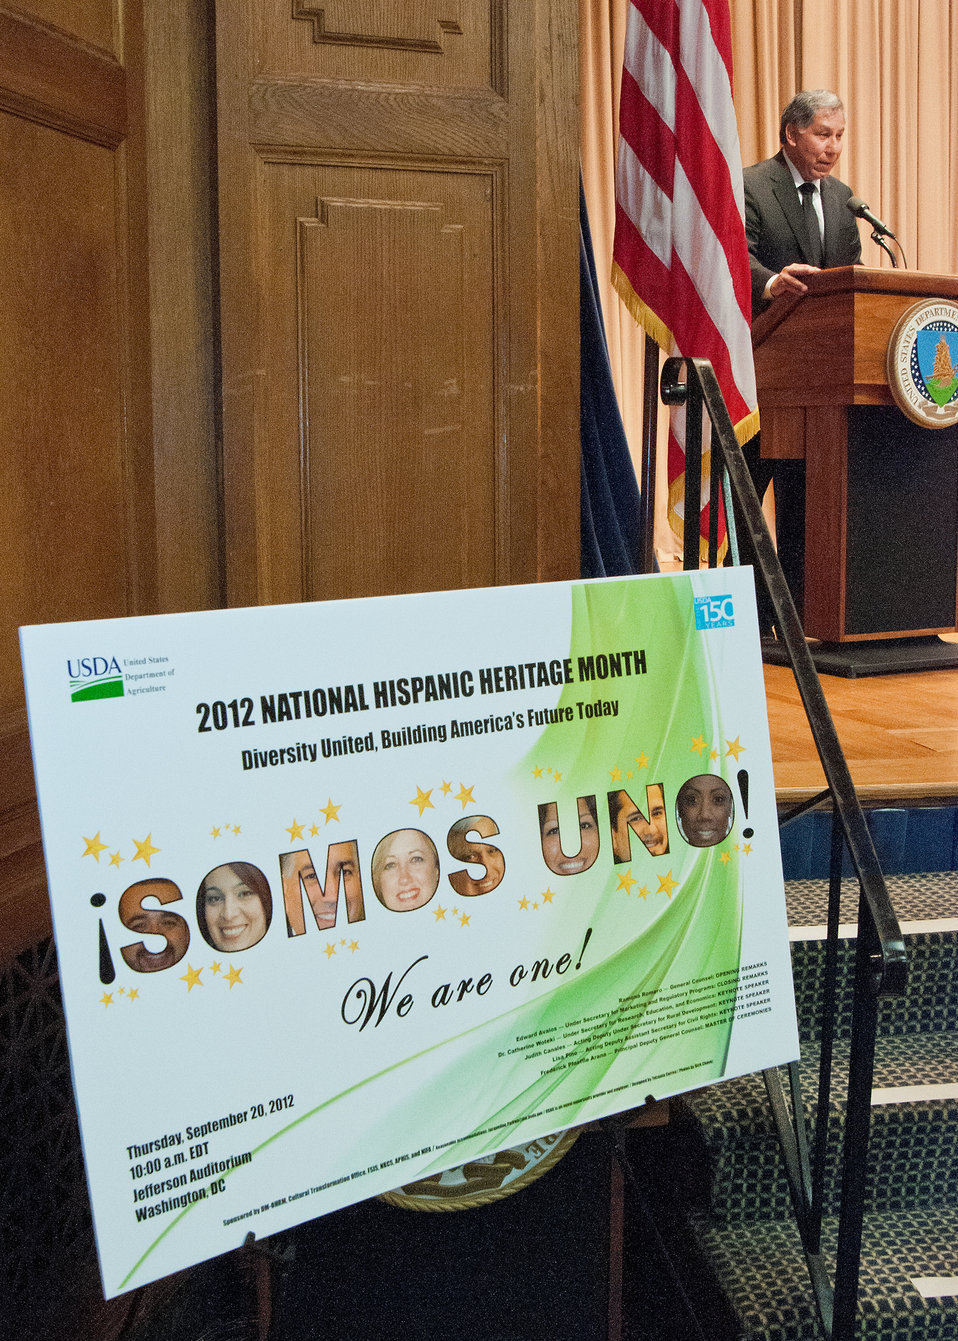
Agriculture Under Secretary for Marketing and Regulatory Programs Edward Avalos gives the closing remarks at the U.S. Department of Agriculture 2012 Hispanic Heritage Month celebration in Washington, D.C. on Thursday Sept. 20, 2012. The theme of the event was, “SOMOS UNO” “We Are One” Diversity United, Building America’s Future Today.